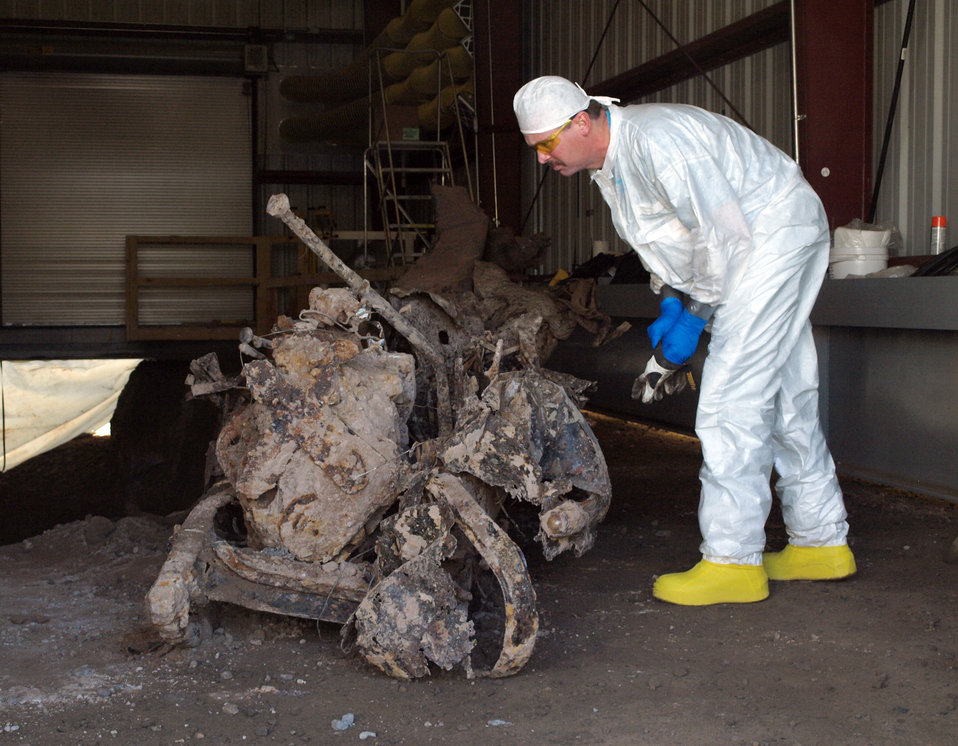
Remnants of 1940s military truck buried in a Manhattan Project-era landfill

A member of a Los Alamos National Laboratory excavation crew inspects the remnants of a 1940s military truck unearthed at the Material Disposal Area B cleanup site.

The truck was unearthed inside a sealed building where digging is taking place at Material Disposal Area B (MDA-B), the Lab’s first hazardous and radioactive waste landfill.
MDA-B was used from 1944 to 1948. The rusting hulk is believed to be a Chevrolet military truck. It’s barely recognizable, but a fender, an inline six-cylinder engine block, a steering column, and part of the cab are visible.